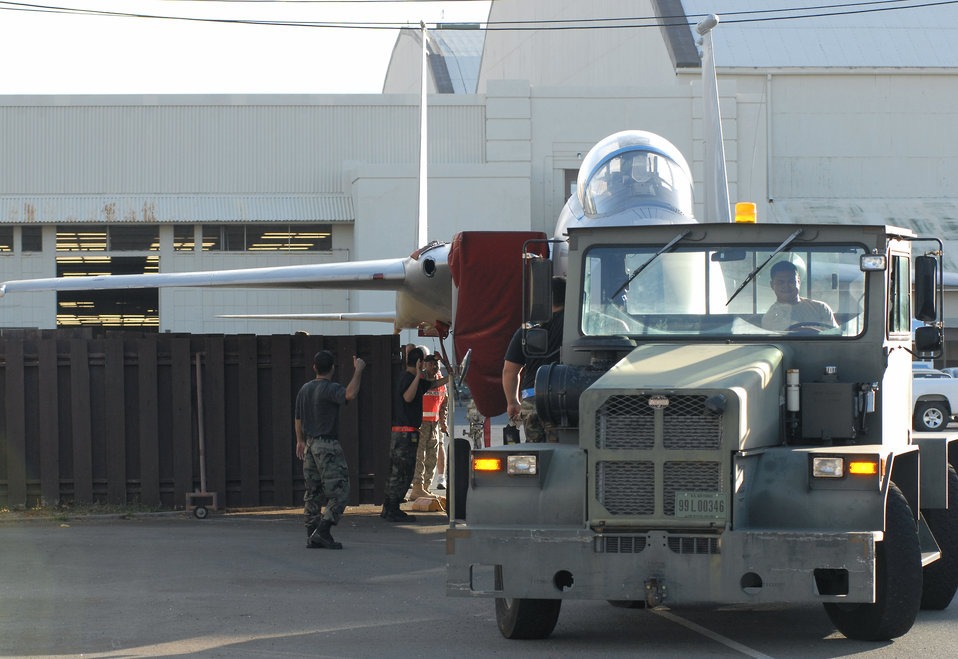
Flying low

Staff Sgt. Robert Rabacal receives directions from Staff Sgt. Jacob Correa on which way to turn an F-15 Eagle Aug. 26 at the cargo pier at Hickam Air Force Base, Hawaii. The F-15 became part of the pacific Aviation Museum Pearl Harbor on Ford Island in Hawaii. Sergant Rabacal is a tug driver assigned to the 154th Maintenance Squadron of the Hawaii Air National Guard, and Sergeant Correa is an F-15 crew chief with the 154th MXS.